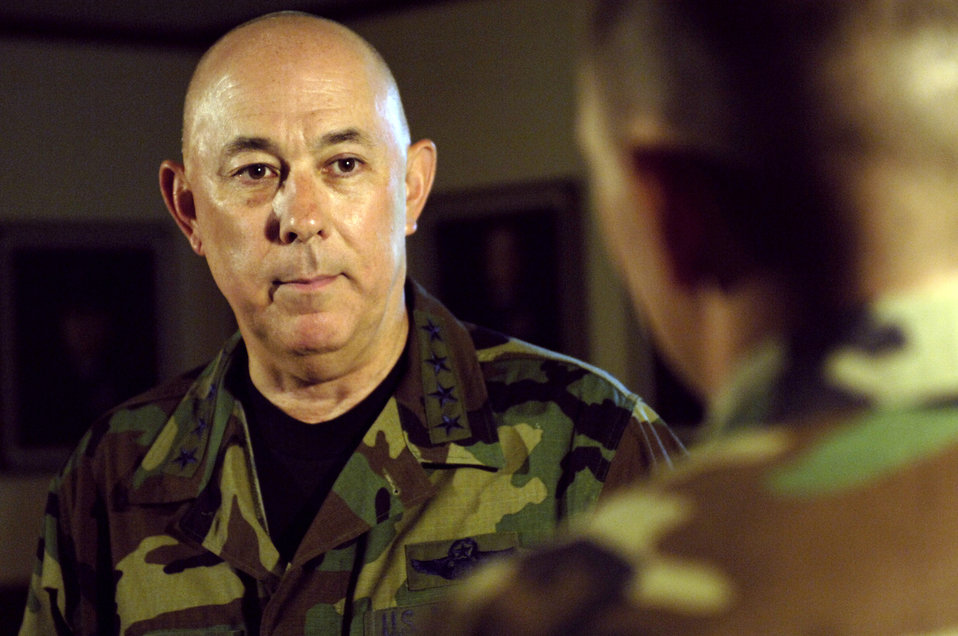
Moseley: C-17 'worth weight in gold' in Pacific

HICKAM AIR FORCE BASE, Hawaii -- Air Force Chief of Staff Gen. T. Michael Moseley talks to an Airman with the 15th Airlift Wing here Oct. 6. General Moseley is here holding a general officers call for the Pacific Air Forces theater.